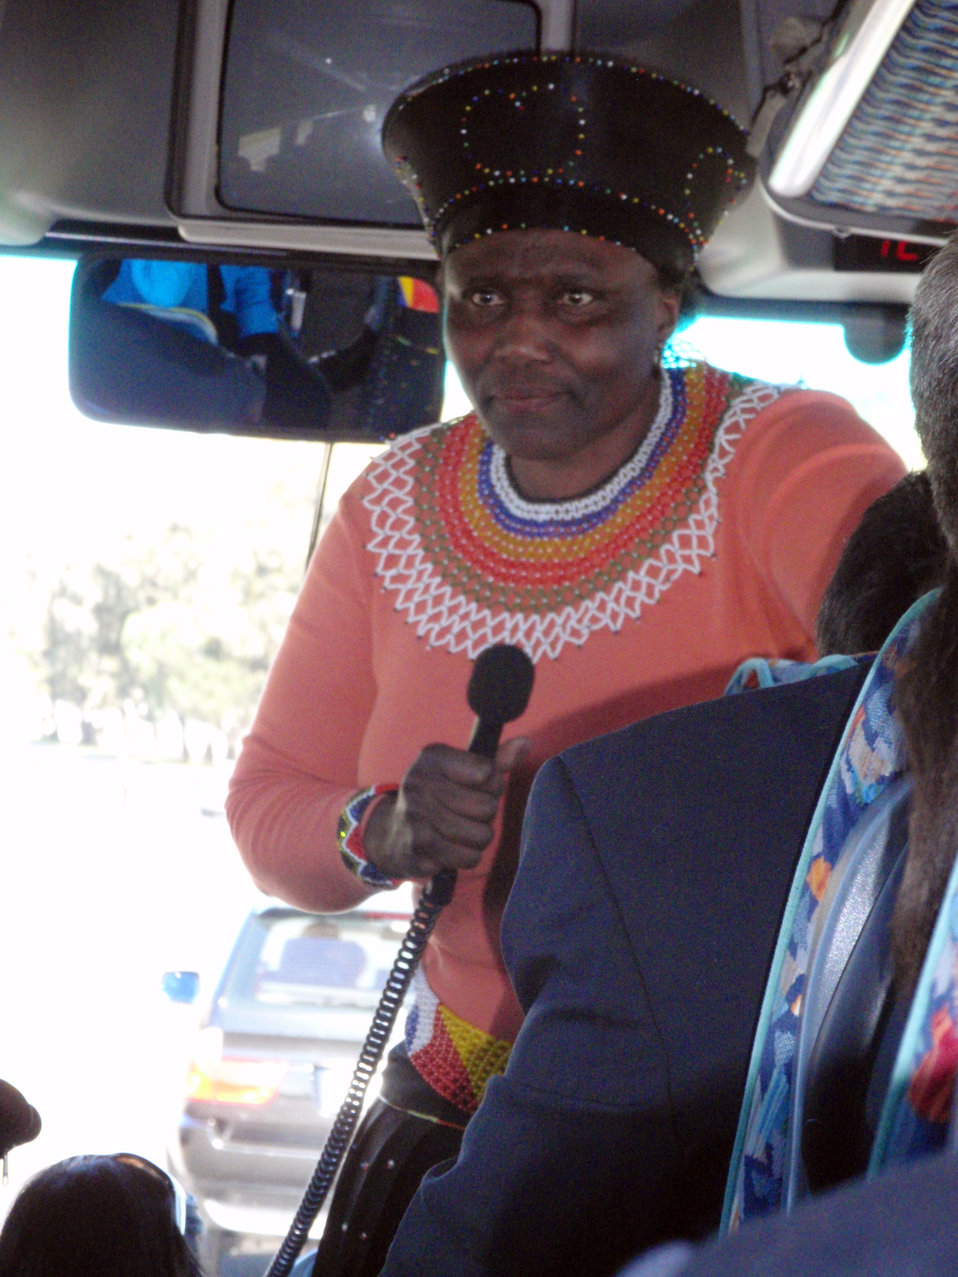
Behind the Scenes: Secretary Clinton Visits Victoria Mxenge Housing Development

Patricia Matolengwe briefs members of the press before arriving at the Victoria Mxenge Housing Development in Cape Town, South Africa August 8, 2009.